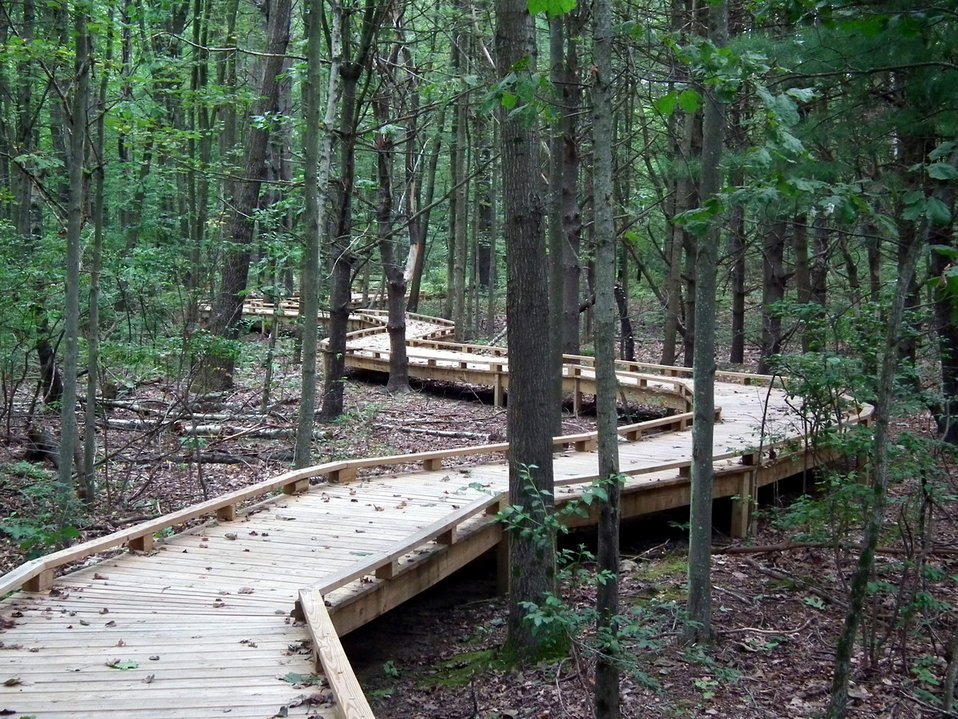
Meandering trail at Parker River National Wildlife Refuge.